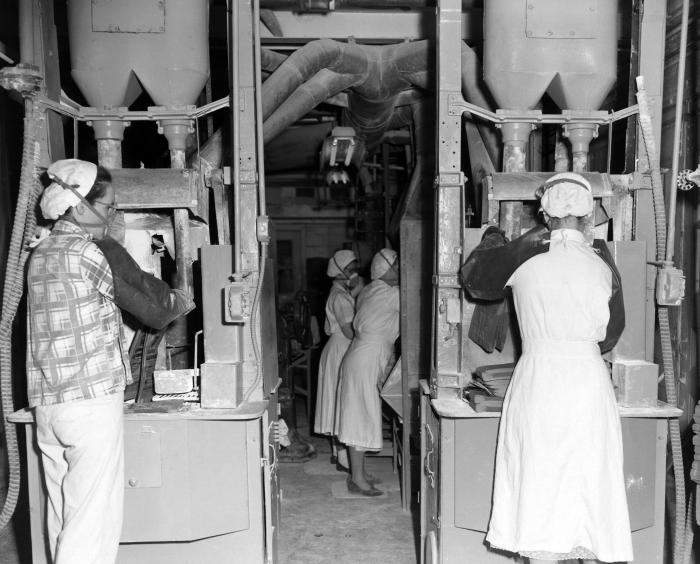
This 1953 photograph was provided by the Center for Disease Control's (CDC), National Institute for Occupational Safety and Health (NIOSH). The image depicted a number of female employees who were packaging lead arsenate, which is the lead salt or ester of arsenic acid. Note that all workers were using personal protective equipment including caps, face masks, eye protection, and coveralls over their clothing, in order to guard them against workstation contaiminants.Workers can be exposed to lead through inhalation of fumes and dusts, as well as through ingestion as a result of lead-contaminated hands, food, drinks, cosmetics, tobacco products, and clothing. Furthermore, workers can take lead home on their clothes, skin, hair, tools, and in their vehicles, potentially exposing their families to this element's harmful health effects.